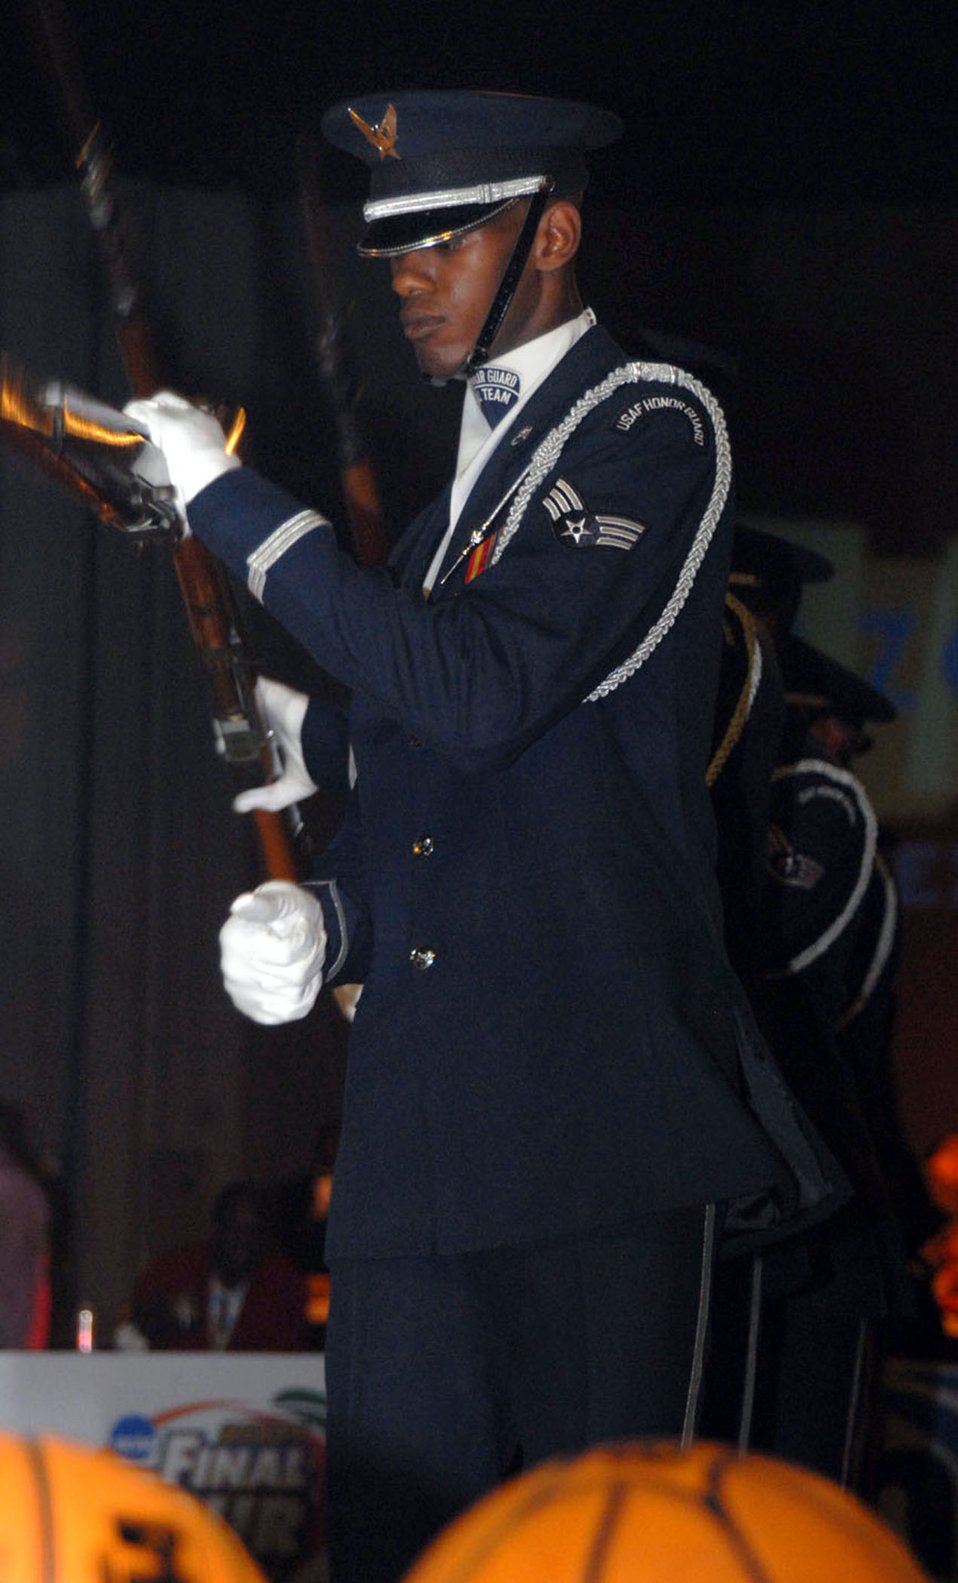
Honor Guard Drill Team keeping sharp for Air Force

Senior Airman Jermaine James, Air Force Honor Guard Drill Team member, performs at the RazorGator experience for fans attending the NCAA Final Four Games March 31- April 2. The drill team recently returned from their latest 11-day tour around the U.S., that included visits to Atlanta; Hill Air Force Base, Utah; and Salt Lake City.